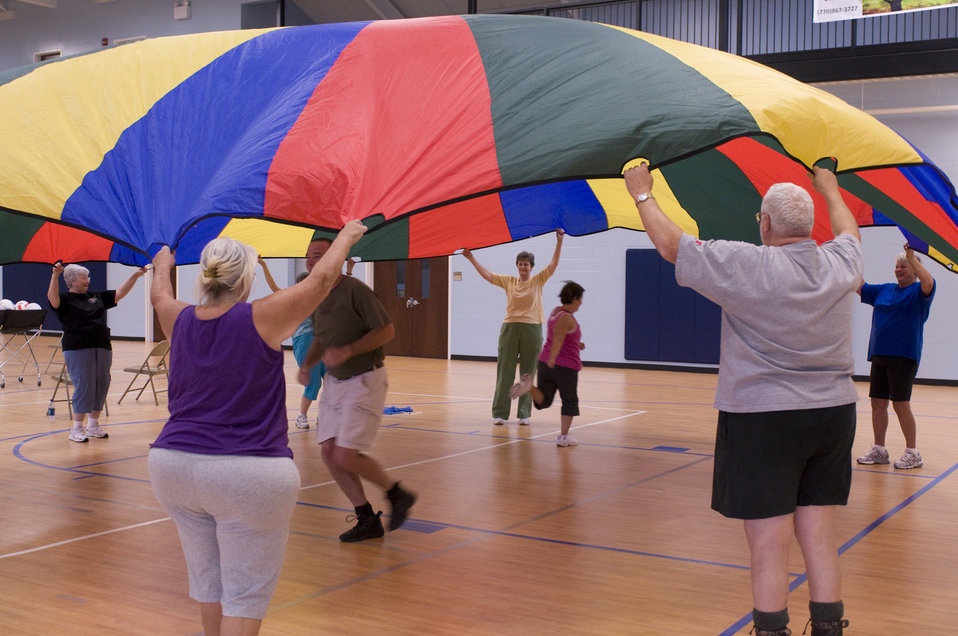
The older individuals pictured here on the wooden floor of an indoor basketball court, were participating in an exercise class consisting of stretching, and aerobic repetitive motion movements. The group members were working the muscles of their shoulders and arms by raising their outstretched arms over their heads then back down again, repeating this motion, while they held on to a large multicolored tarpaulin, which had been equipped with handles along its rim. In this particular view, two of the participants had released their hold on the tarp, and were switching positions, each running as quickly as possible to the other's spot before the tarp came back down to its low-point.